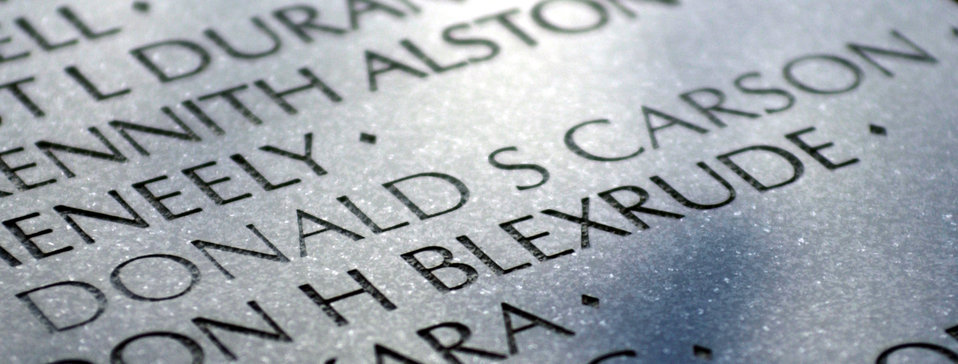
Granite tribute

WASHINGTON -- Staff Sgt. Donald S. Carson's name was added to the Vietnam Veteran's Memorial here May 13. Carson, a San Francisco native, was injured in a military aircraft accident in Thailand on April 12, 1963, and died a few days later. His name was omitted from the monument until now because of a clerical oversight.